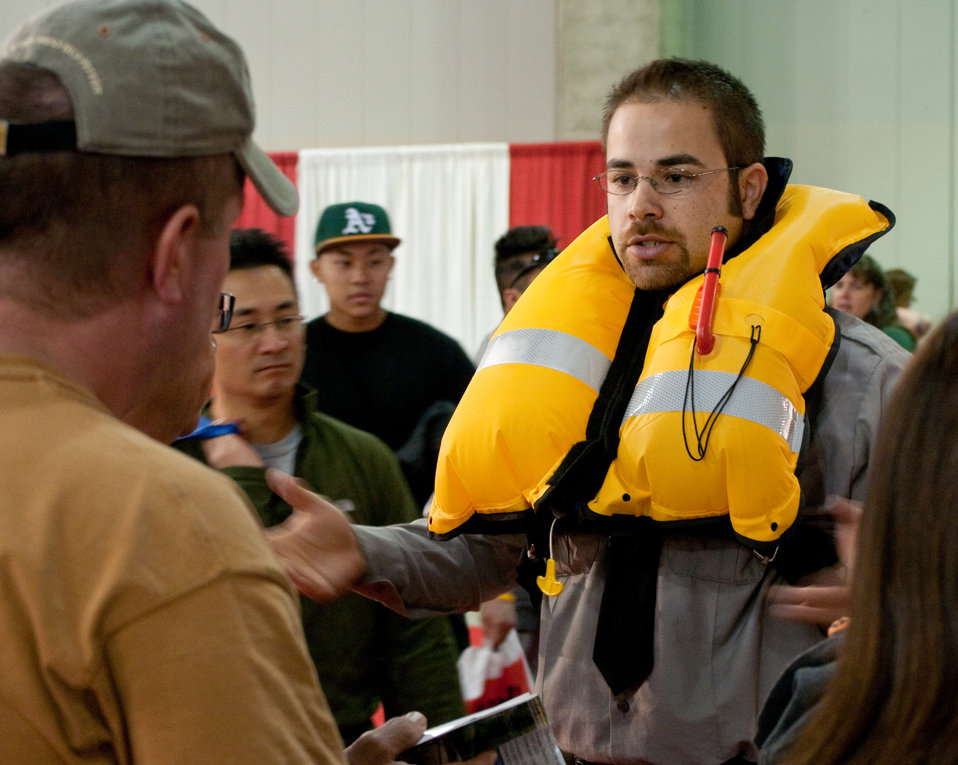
Water safety at the International Sportsmen's Expo

SACRAMENTO, Calif. (Jan. 21, 2011) - U.S. Army Corps of Engineers park ranger Nick Figueroa demonstrates proper use of an automatically inflating life jacket at the International Sportsmen's Expo here Jan. 21. Corps park rangers were on hand at the expo to talk water safety and recreation opportunities at Corps parks with the more than 40,000 expected event attendees. 'We're out here to let people know about the Corps parks out there,' Figueroa said, 'and to let them know that we're here to serve.'